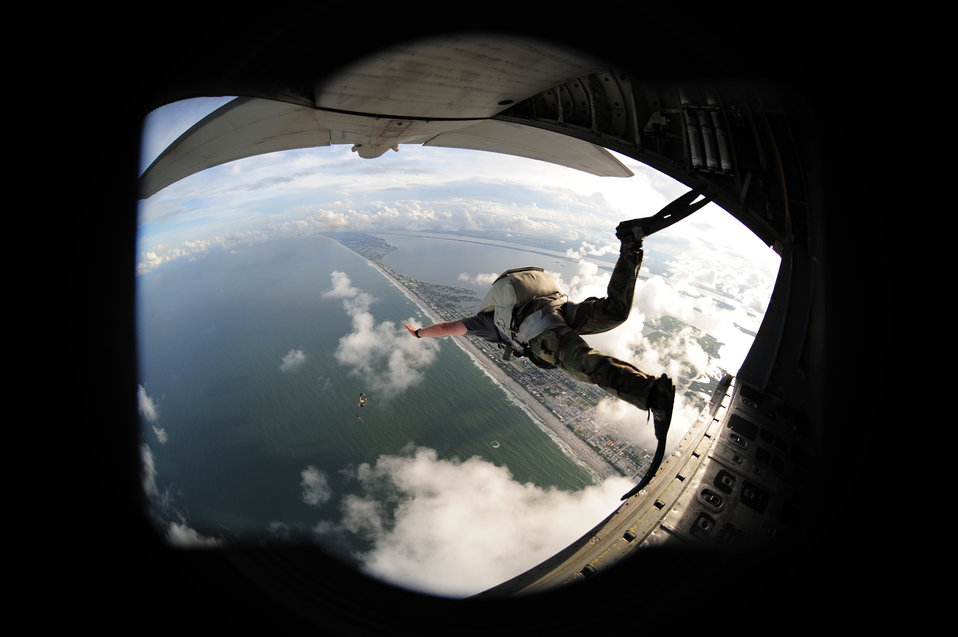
Pararescuemen demonstrate their skills during Air Force Week

A pararescuemen from the 920th Rescue Wing jumps from an HC-130P/N King while performing a freefall rescue demonstration Oct. 27, 2010, at Cocoa Beach, Fla. As part of the demonstration for Air Force Week Cocoa Beach, the Airman will swim to shore.